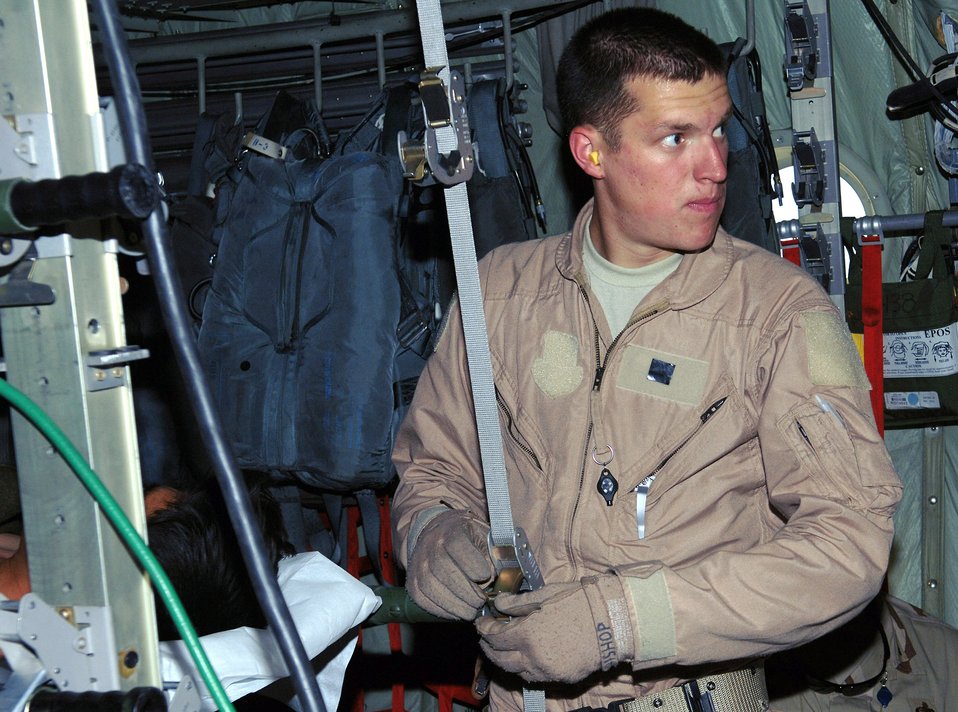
Aeromedical evacuation teams ready to help anytime

Airman 1st Class Bryce Bishop, 455th Expeditionary Aeromedical Evacuation Flight medical technician, secures a litter patient into a C-130 during an aeromedical evacuation mission from Bagram Airfield, Afghanistan. Airman Bishop is deployed from the Wyoming National Guard's 187th Aeromedical Squadron, Cheyenne, Wyo.